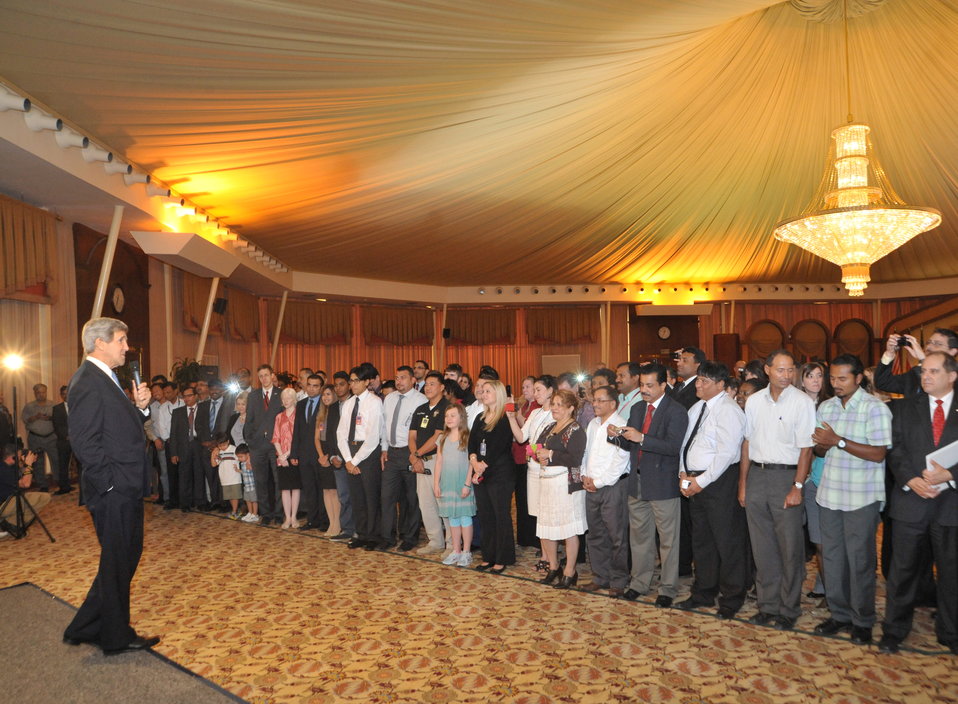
Secretary Kerry Meets With Staff of Embassy Kuwait City

U.S. Secretary of State John Kerry addresses the staff of Embassy Kuwait City, Kuwait, on June 26, 2013.